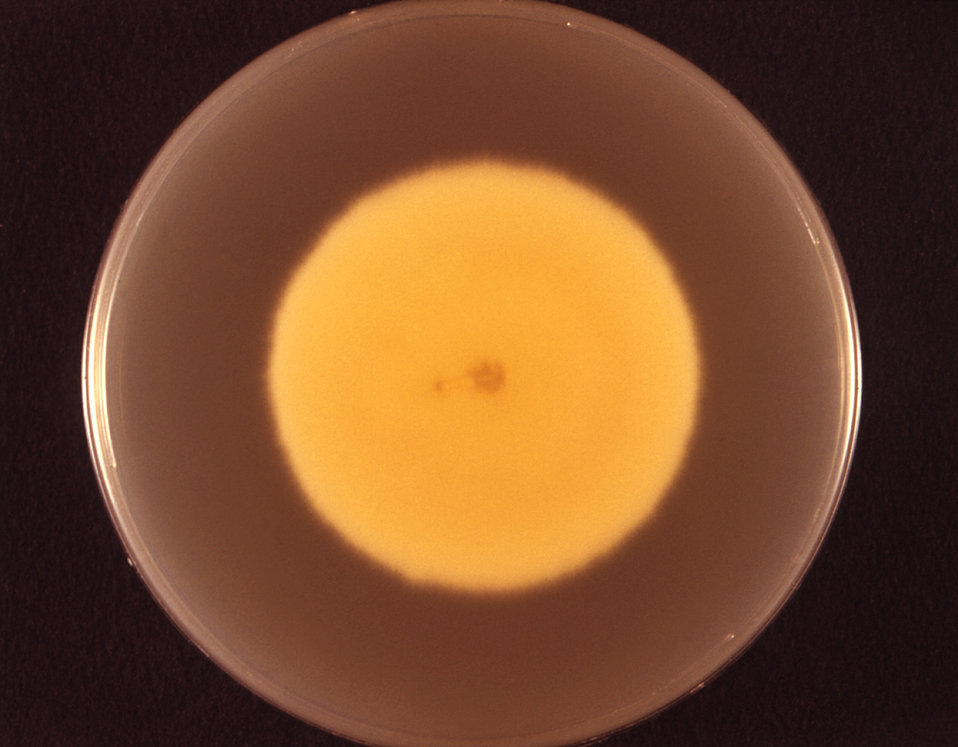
Viewed from the back, i.e., reverse, this image depicted a Petri dish containing Sabouraud's (SAB) dextrose agar, upon which a Microsporum persicolor fungal colony had been cultured. As seen in this reverse view, the colonial coloration can be yellow, or may even be a red-brown. From the front, as depicted in PHIL 10904, the colonies can be white, or depending upon the Microsporum sp., may run the gamut, sporting a yellow, beige or cinnamon color, and display a flat, or glabrous, woolly or powdery texture.